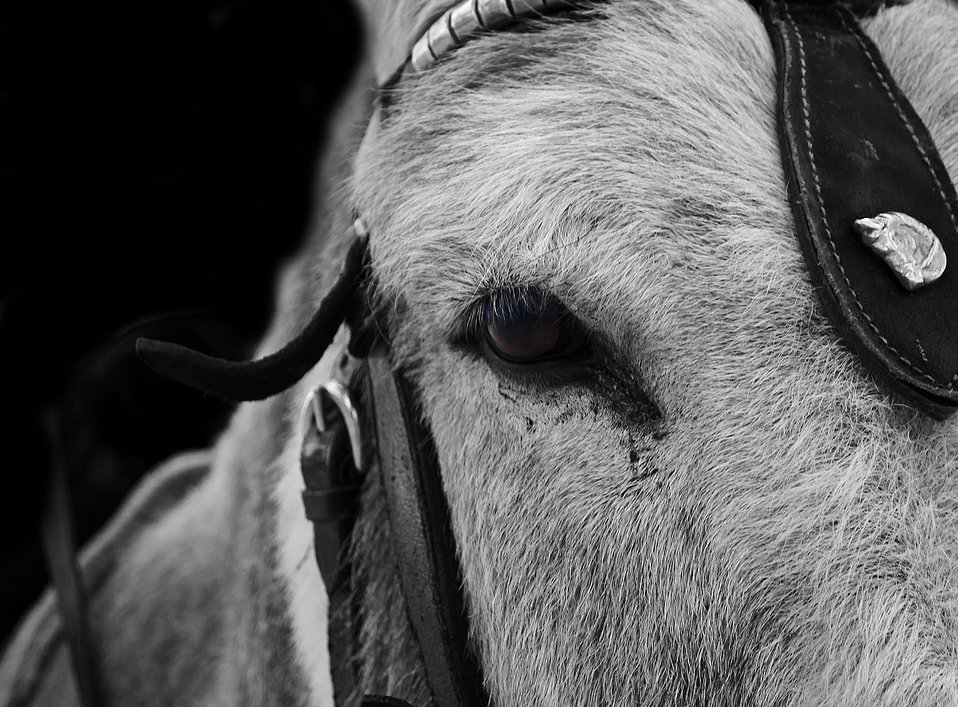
Donkey - macro.